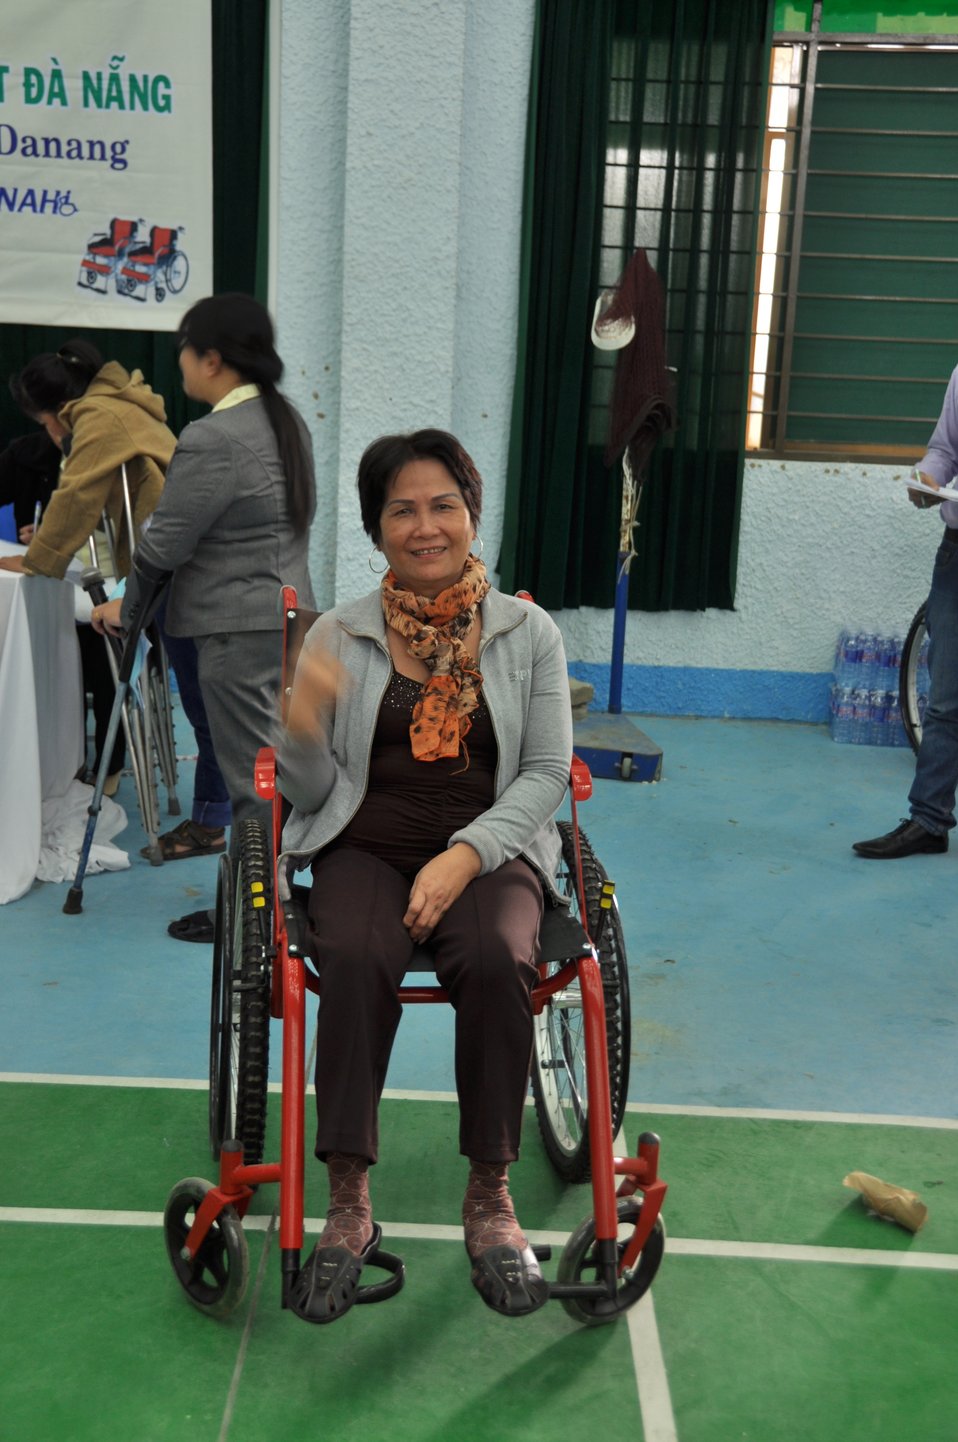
USAID supports delivery of wheelchairs to people with disabilities in Danang.

Danang, December 3, 2013.